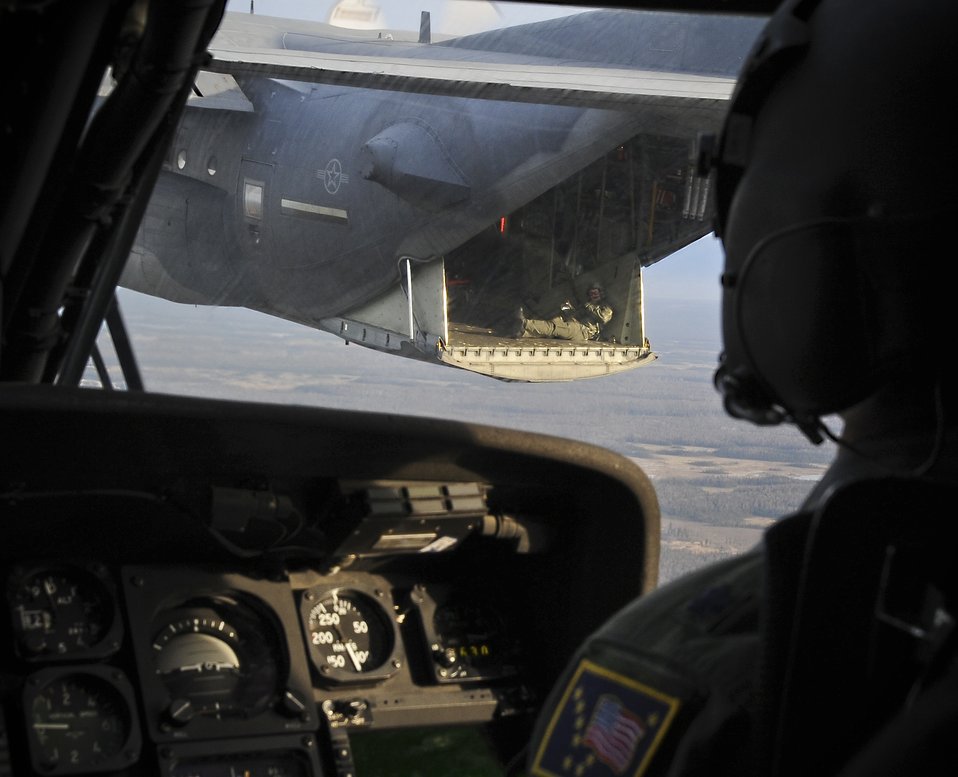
Keeping an eye on things

An HC-130 Hercules loadmaster (background) watches air refueling operations of an HH-60G Pave Hawk during training recently at Kulis Air National Guard Base, Alaska. Rescue squadrons from Kulis ANGB conduct training missions five days a week throughout the Alaskan airspace.